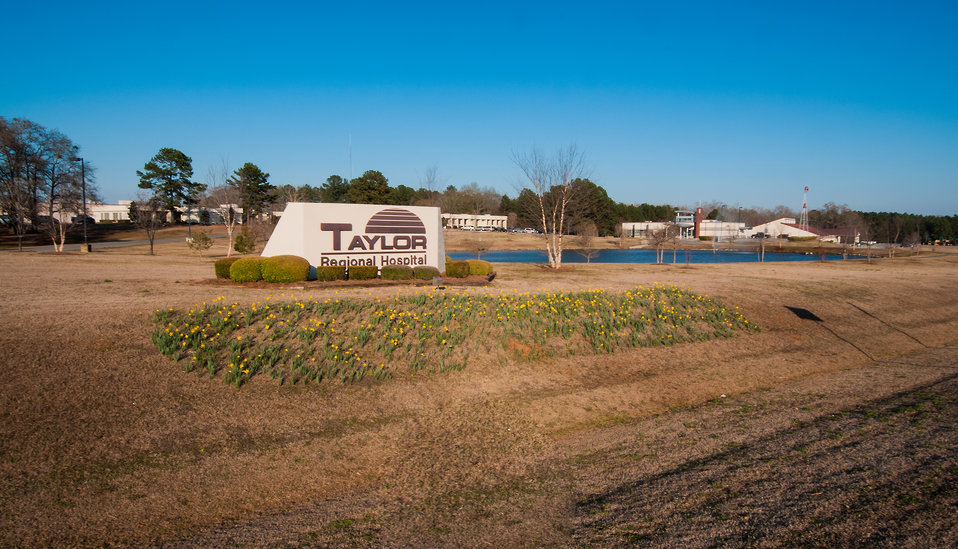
The R.J. Taylor Memorial Hospital on a sunny day in Hawkinsville, Pulaski County, GA on Mar. 6, 2013. This is the hospital’s main location and the facility is a licensed private, not-for-profit acute care facility providing emergency, specialty and primary health care. There is a second hospital located in Bleckly County, GA which provides services to residents in these two very rural counties of Georgia. These counties have a high percentage of people living below the state average poverty level and are considered the most economically distressed. The hospital has purchased an Electronic Medical Records System under an incentive program by the Federal government through the U.S. Department of Agriculture (USDA) Rural Development (RD) Community Facilities Loan (CF) that ensures fiscally responsive access to superior quality integrated health care.